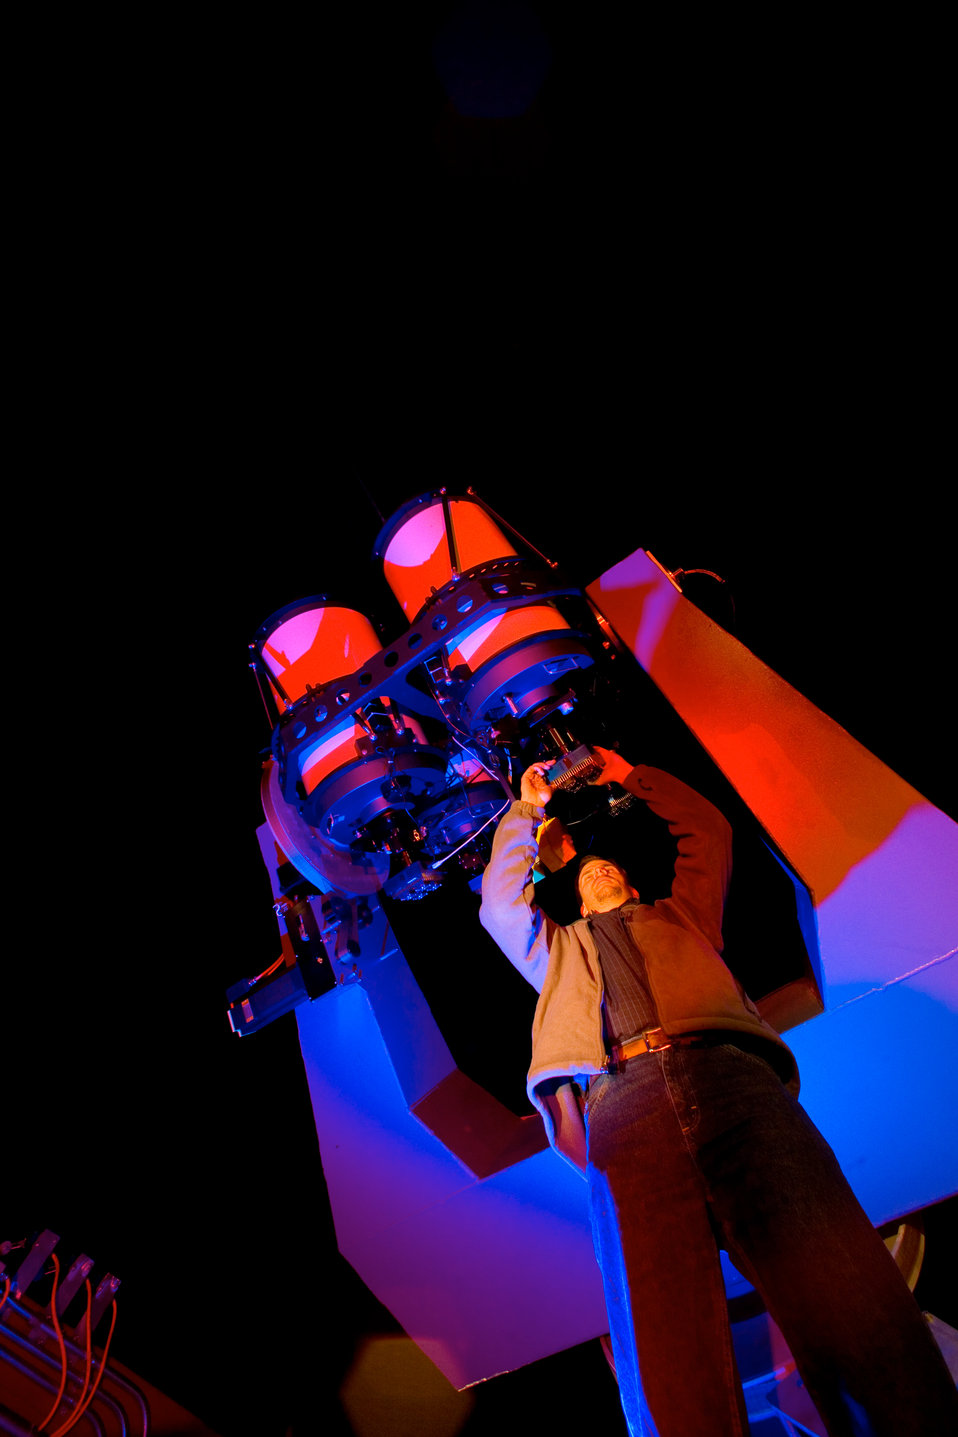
TECHNICIAN SERVICES LOS ALAMOS NATIONAL LABORATORY'S LATEST RAPTOR (RAPID TELESCOPES FOR OPTICAL RESPONSE) TELESCOPE.

RAPTOR telescope will capture the first color cinematography of nature's largest explosions - gamma ray bursts.